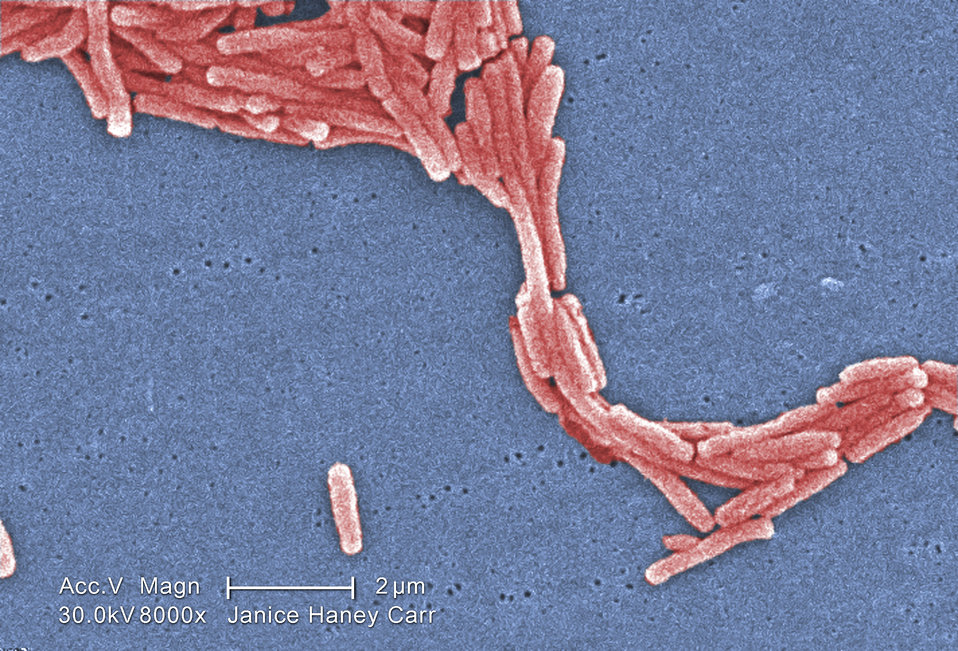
Under a moderately-high magnification of 8000X, this colorized scanning electron micrograph (SEM) depicted a grouping of Gram-negative Legionella pneumophila bacteria. Please see PHIL 11092 through 11152 for additional SEMs of these organisms, specifically PHIL 11119 for a black and white version of this image.